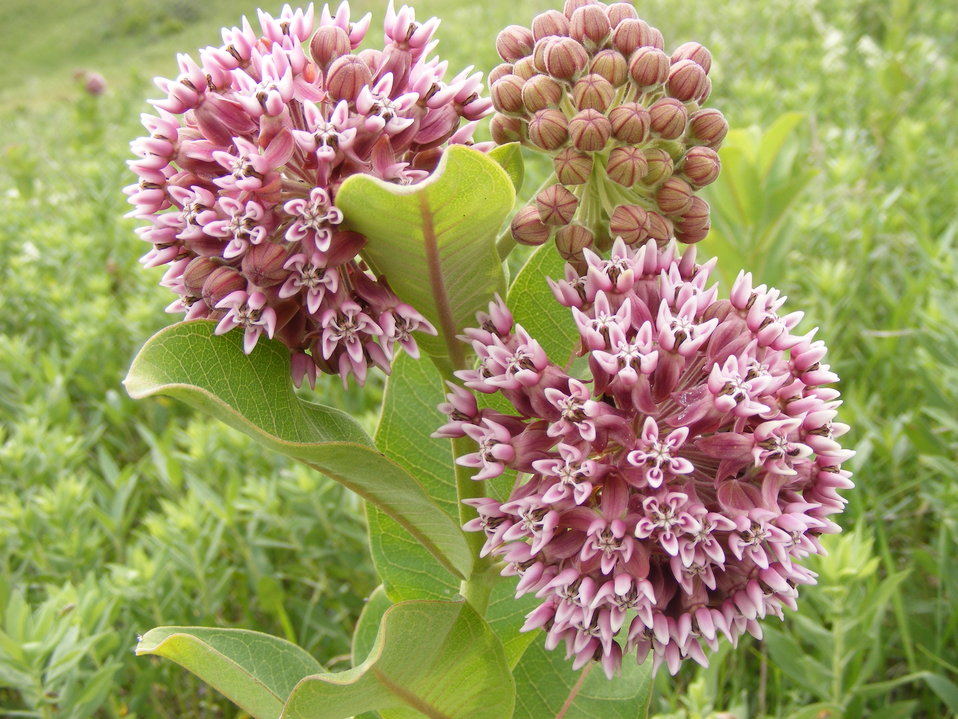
Common Milkweed

Once a common, and often thought of as a weedy species, milkweed is now becoming more scarce due to heavy spraying and plowing of fence rows and marginal lands.